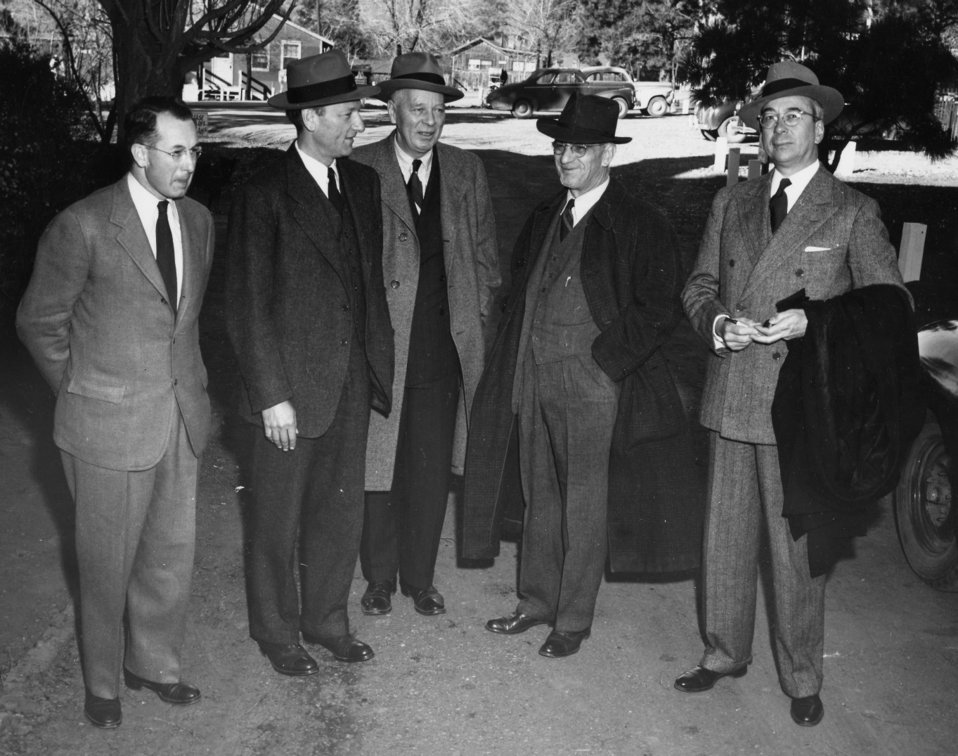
AEC COMMISSIONS AT LASL ( BACHER, LILIENTHAL, PIKE, WAYMAC)